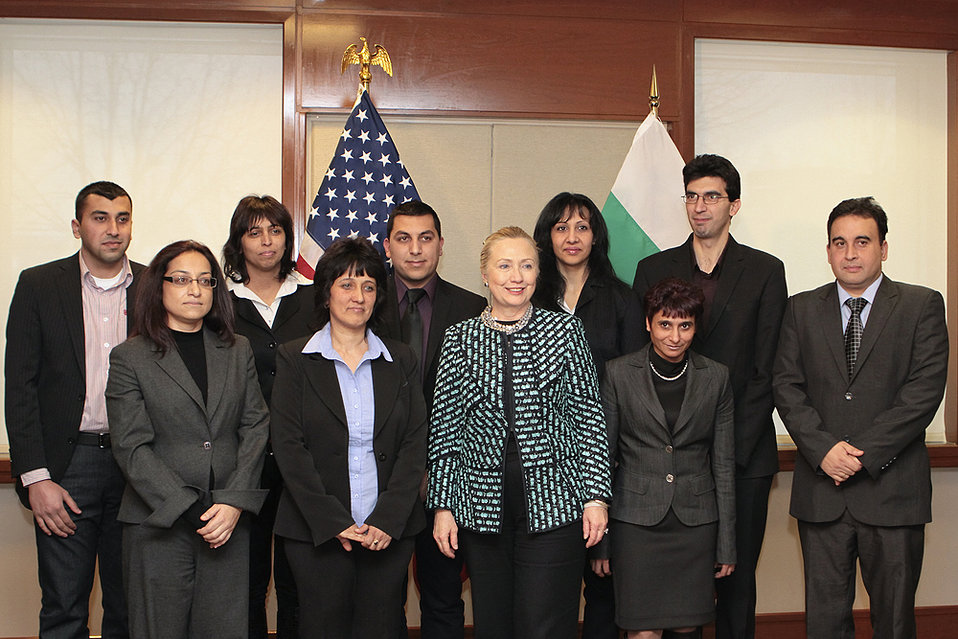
Secretary Clinton and Roma NGO Members Pose for a Photo

U.S. Secretary of State Hillary Rodham Clinton poses for a group photo with Roma non-governmental organization (NGO) members in Sofia, Bulgaria, on February 5, 2012.